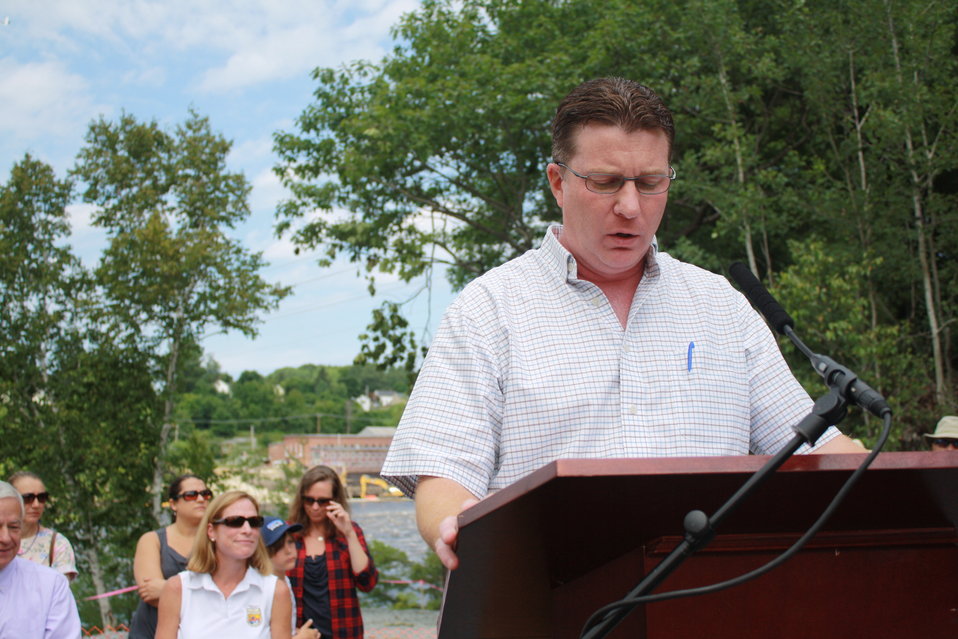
Veazie Dam Removal

Pat Keliher, Commissioner of the Maine Department of Marine Resources. Note the excavators prepping in the background.